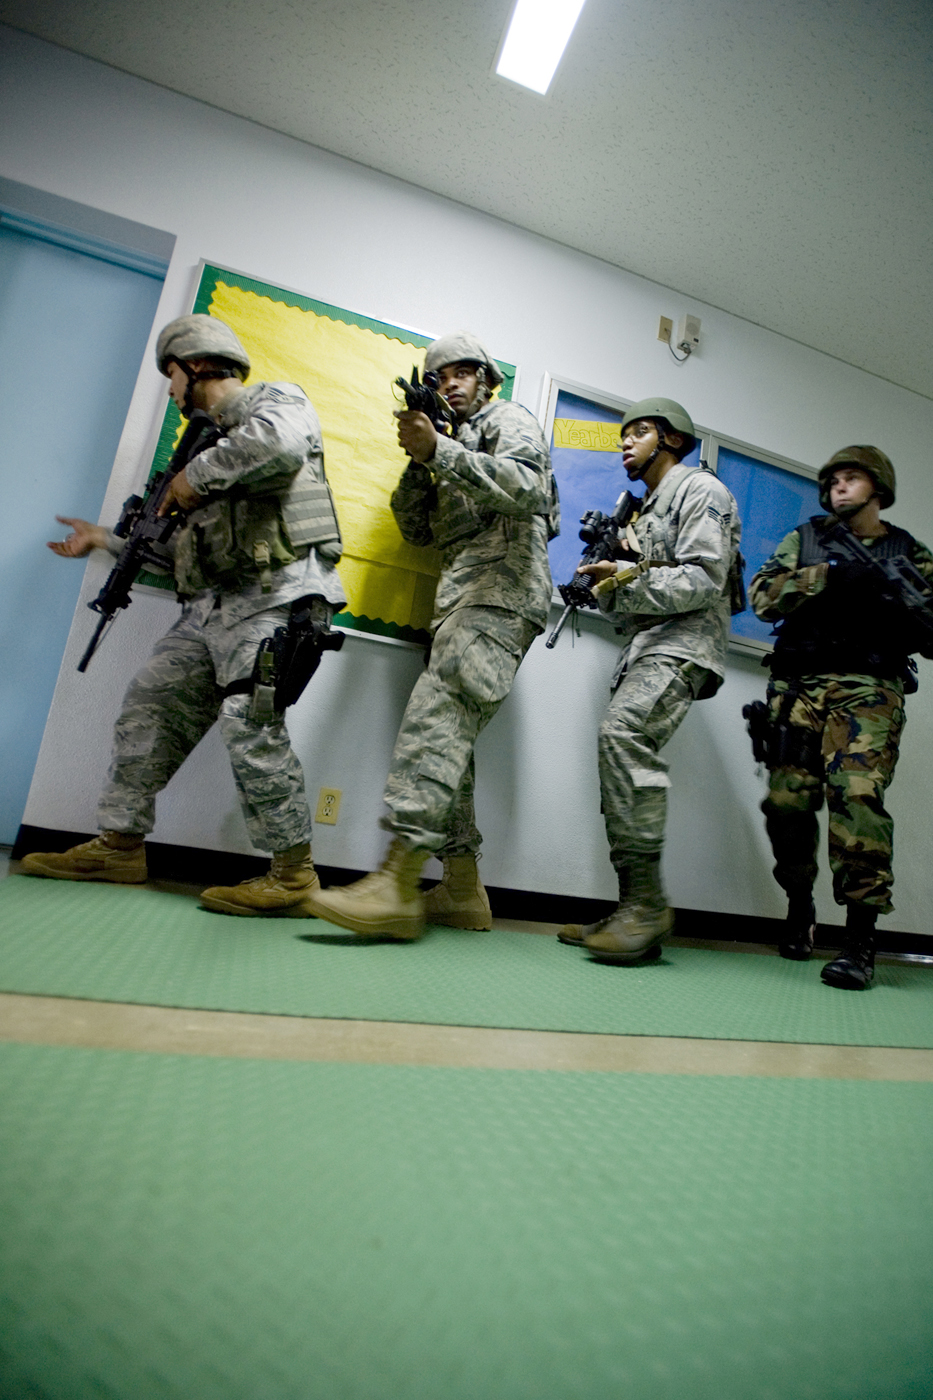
Security forces Airmen, Sailors learn new active shooter techniques

Staff Sgt. Anthony Santillan, Airman 1st Class Steven Howard Jr. and Senior Airman Rolland Gould along with Petty Officer 1st Class Jason Clark train on quick-reaction response tactics July 22, 2010, at Misawa Air Base, Japan. The training was part of a high-risk response program taught to base security members that will allow them to respond to an active shooter incident. The Airmen are assigned to the 35th Security Forces Squadron at Misawa AB, Japan, and Petty Officer Clark is the Naval Air Facility security operations supervisor.